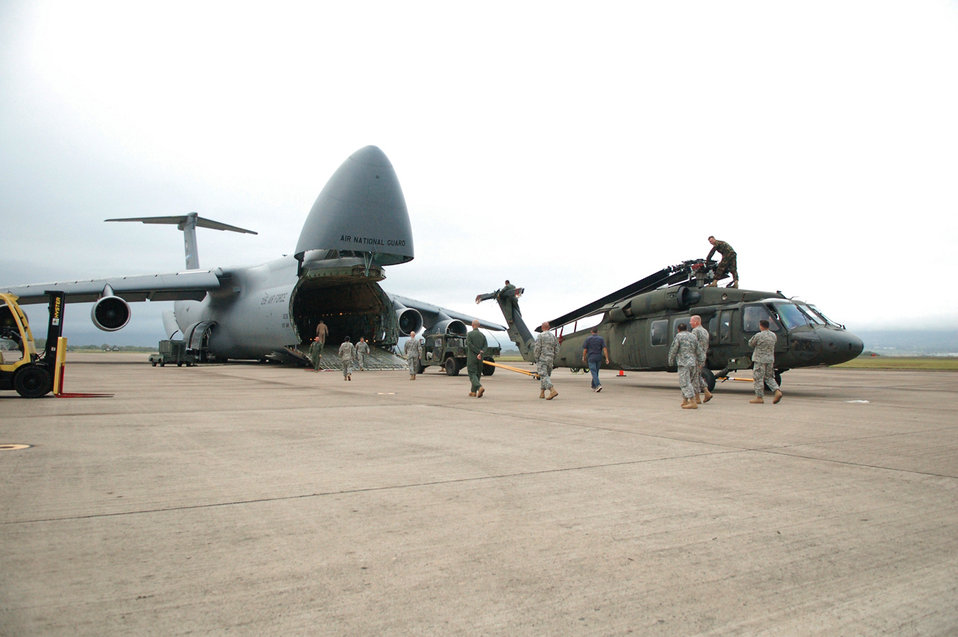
JTF-Bravo deploys to support Tropical Storm Noel relief in Dominican Republic

Soldiers and Airmen from Joint Task Force-Bravo here position a UH-60 Black Hawk helicopter for loading onto a C-5 Galaxy from the New York Air National Guard. A team of 19 Airmen and Soldiers and two helicopters from Joint Task Force-Bravo departed here Nov. 5 heading for the Dominican Republic to assist with recovery efforts in the wake of Tropical Storm Noel.